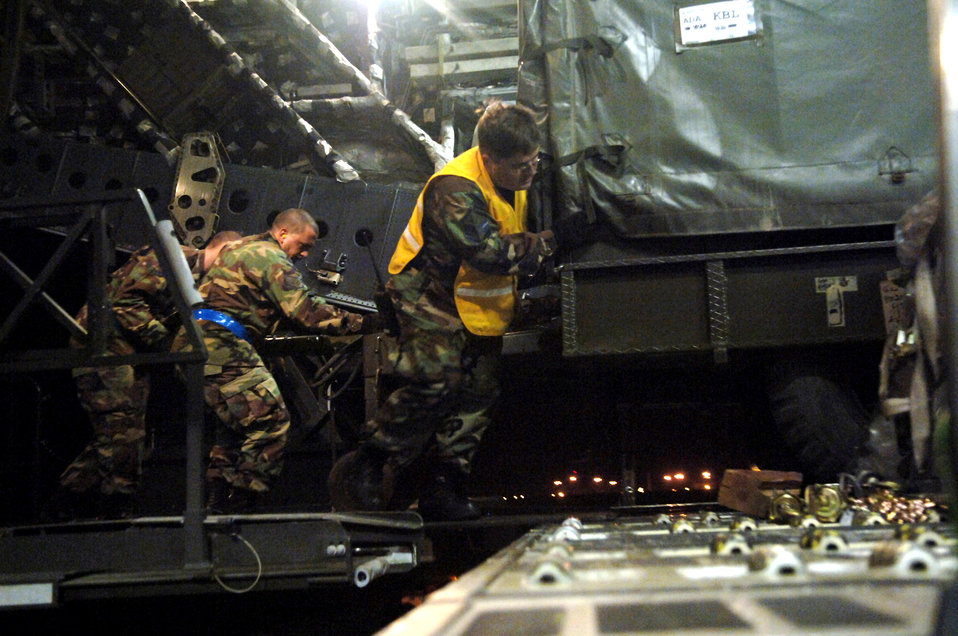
Turkish-U.S. airlift effort brings supplies to Afghan Army

Master Sgt. James Triplett, Staff Sgt. Robert Izzett and Airman 1st Class Thomas Hickey load a trailer onto a C-17 Globemaster III Feb. 20 at Incirlik Air Base, Turkey. Turkish and U.S. Air Forces' joint effort provided 94,000 pounds of supplies and equipment for the Afghan army to use in the war on terrorism. The Airmen are assigned to the 728th Air Mobility Squadron.